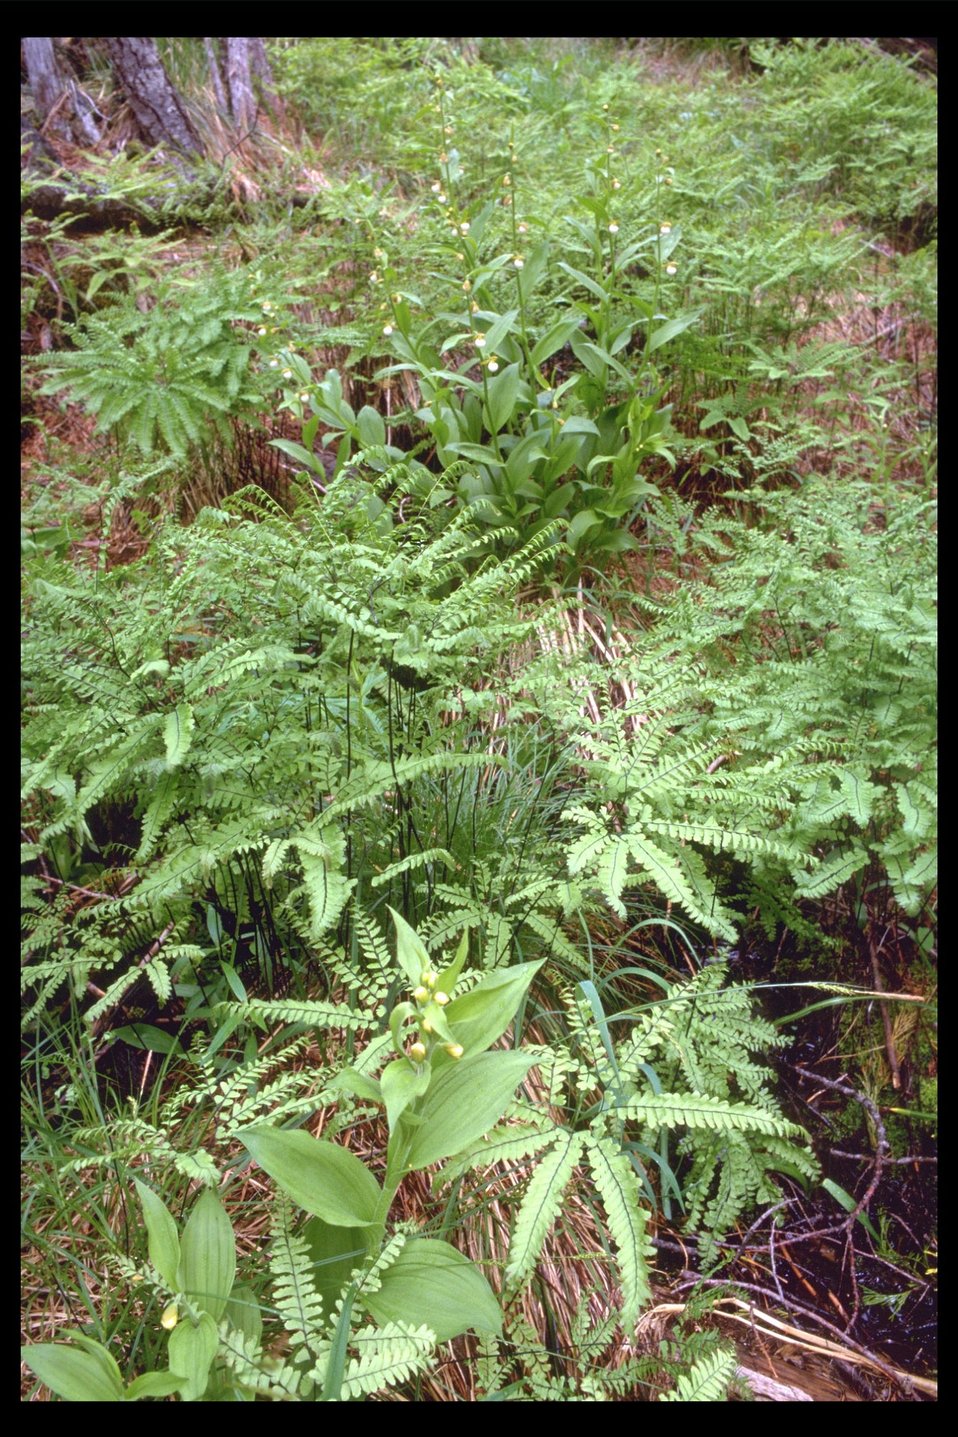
Five-Finger Fern (Adiantum aleuticum) near Goolaway Gap.